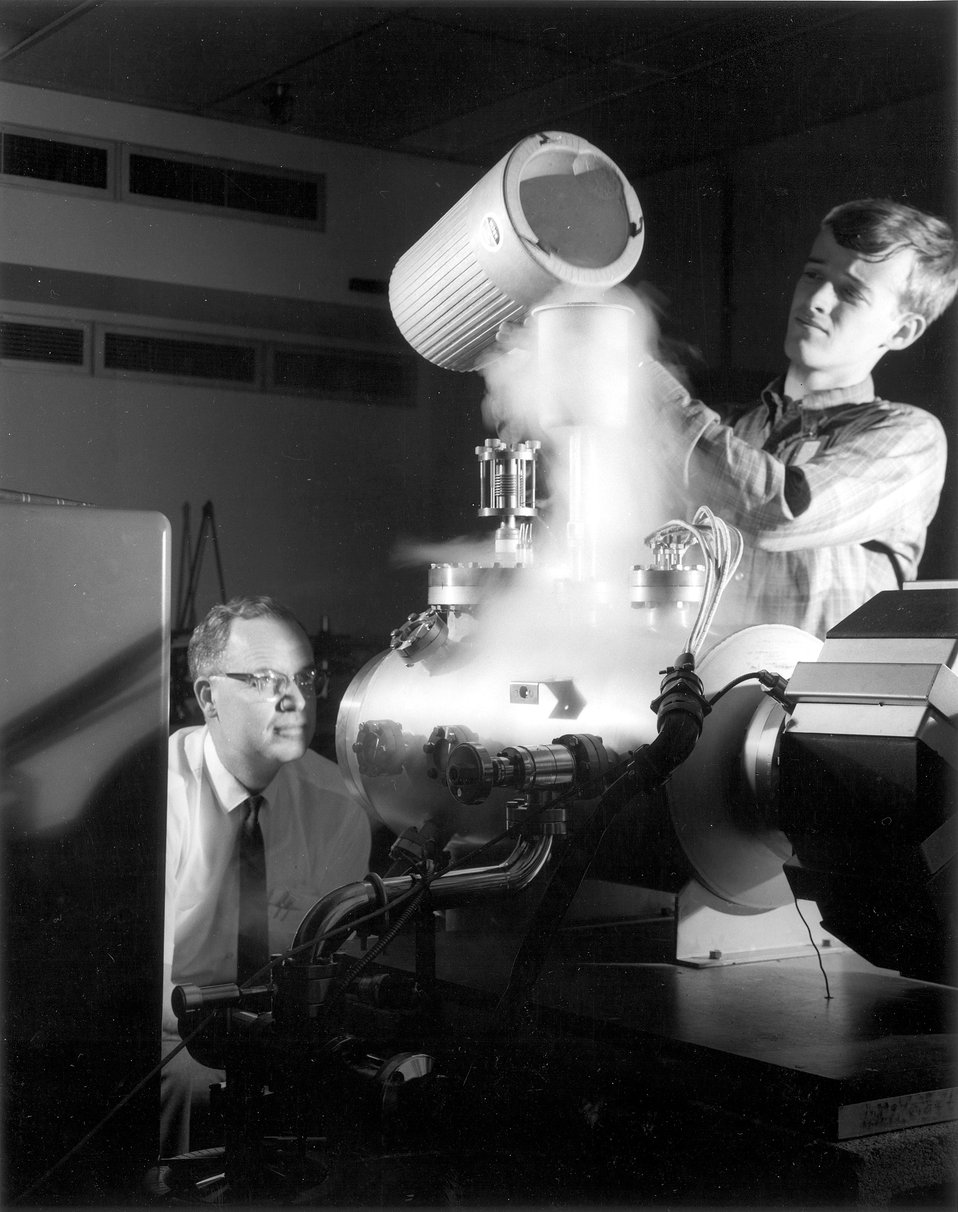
A piece of ultra-high vacuum equipment used in the development of a field emission source. Research in physics at Oak Ridge National Laboratory ranges from studies of fundamental particles to the structure of solids. c. 1968